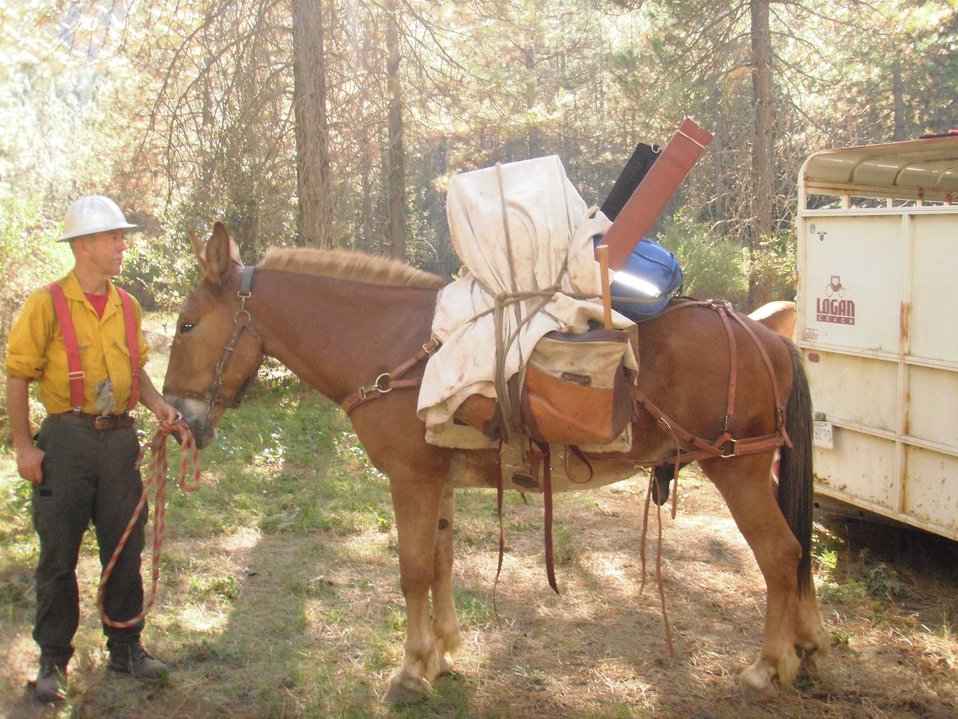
Pack mule carries support equipment for firefighters in the rough terrain of the Corral Complex Fire. The Corral Complex Fire in the Six Rivers National Forest near the Trinity Alps Wilderness area in California began on Aug. 10, 2013 by lightning and has consumed approximately 12,272 acres and is 67% contained.